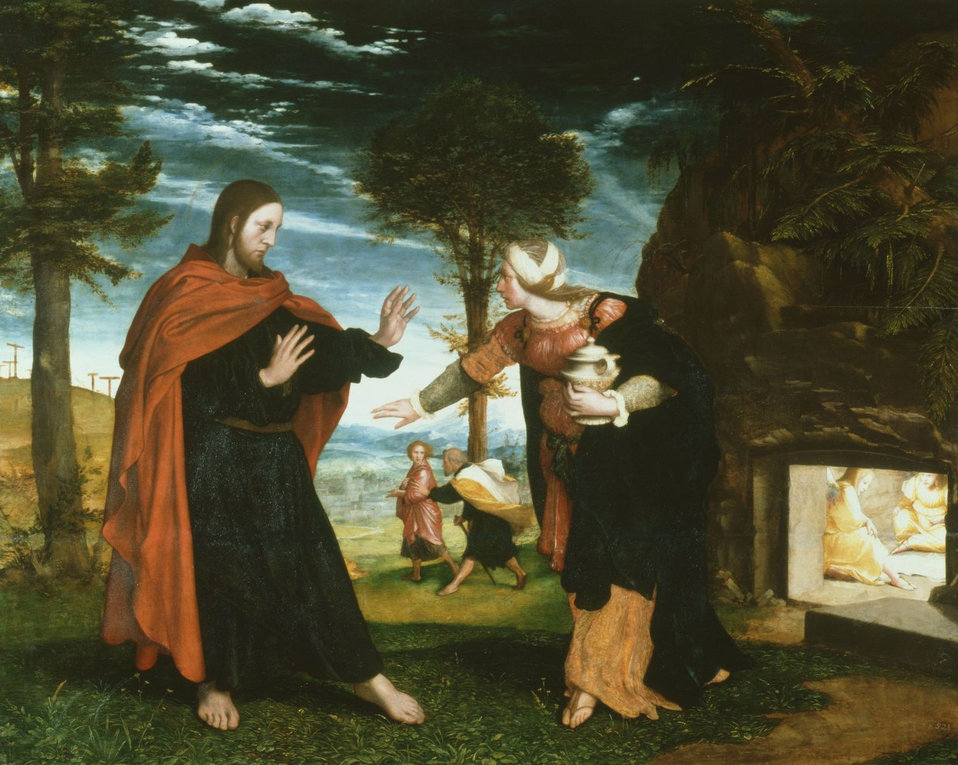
'Noli me tangere' by Hans Holbein the Younger